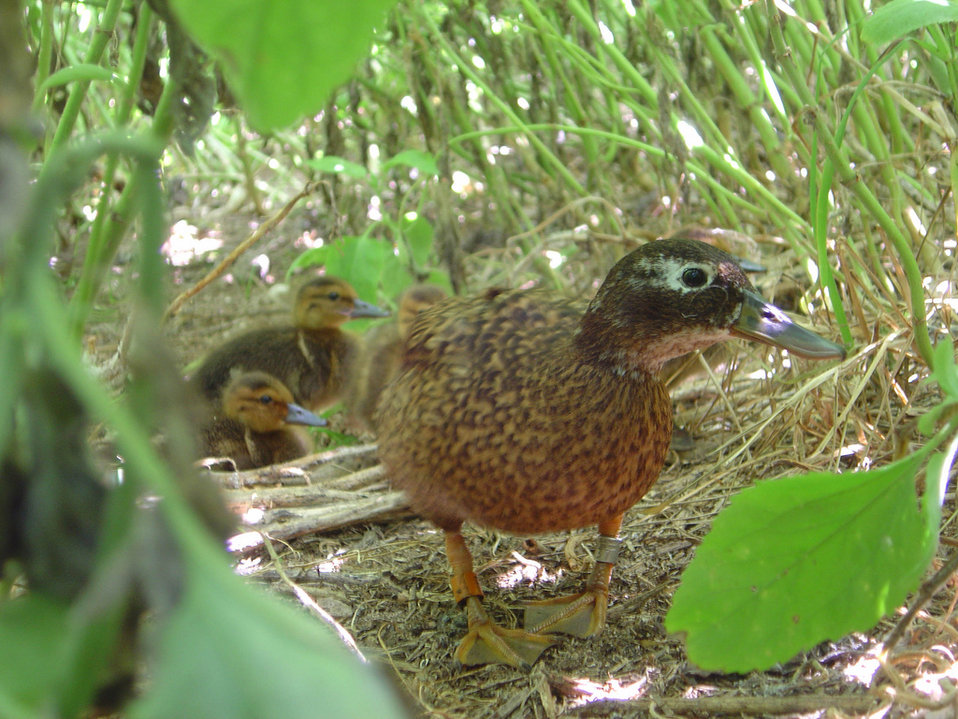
April

endangered Laysan duck hen hides in the underbrush with her ducklings
Midway Atoll National Wildlife Refuge, Pacific Islands